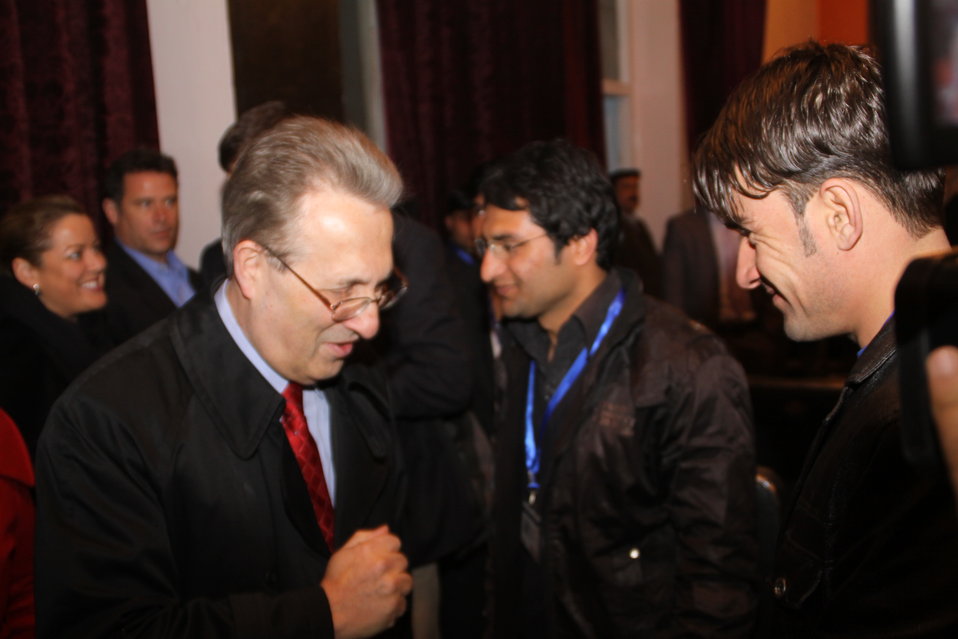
U.S. Ambassador E. Anthony Wayne